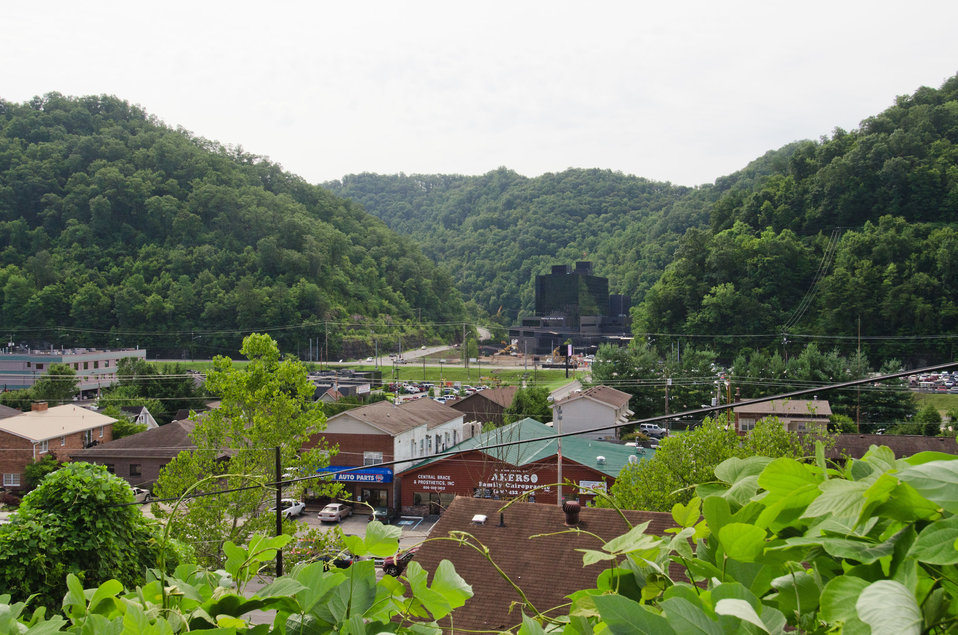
From across the horseshoe shaped town of Pikeville, KY, various buildings, parking lots, temporary walkways, and above ground construction of the Pikeville Medical Center (PMC) expansion project, on Tuesday, July 12, 2011, in Pikeville, KY. After months of infrastructure construction and rain delays, one of Kentucky’s largest American Recovery and Reinvestment Act (ARRA) projects is under way. The $44.6 million Community Facilities Loan will finance construction of a new medical office building and parking garage. The new medical office building will house outpatient surgery, endoscopy, surgical support and provide exam, waiting and office space for 23 primary and specialty care physicians. It also will contain a medical research center to support existing research – in conjunction with Pikeville College – on health disparities, genetic research related to the prevalence of cancer and other areas, including drug and treatment trials. The new parking garage with more than 1,000 spaces will be built adjacent to the new medical building, eliminating the need to shuttle patients back and forth from remote parking areas. The new garage will provide closer and easier proximity to medical and hospital services for all patients.
Wayne Rutherford, County Judge-Executive for Pike County, says funding from ARRA is a boon for his county because it will create jobs.

“This is great for Pike County’s economy. We know we have a great hospital, and with this support, it will be even better,” said Rutherford. “The unemployment rate here is above the state average and this will stimulate jobs. There will be construction, which means lots of jobs on the front end – and even more once it is built.”

Pike County is one of Kentucky’s persistent poverty counties and the current medical facility provides health care services for a rural population of more than 68,000. This project will create 1,430 direct and indirect construction jobs, in addition to 97 long-term jobs. It is scheduled to be completed in December 2012.

“This project is a prime example of the ARRA monies being utilized for much-needed health care facility expansion in an economically-depressed region of Eastern Kentucky and Appalachia,” said Tom Fern, State Director for Rural Development in Kentucky. “This hospital has received national recognition for its quality of care, and this money will allow them to expand and build upon their success and continue providing quality health care services to the region.”

PMC was named National Hospital of the Year by the American Alliance of Healthcare Providers in November 2009. The hospital was among 400 elite health care facilities to apply for this prestigious honor. To earn this recognition, PMC competed against more than 400 hospitals, including the Mayo Clinic, the John Hopkins Hospital, Cedar-Sinai Medical Center, the Cleveland Clinic, Duke University Medical Center and Vanderbilt University.

Pikeville City Manager Donovan Blackburn said the medical center is the largest employer in Pikeville and contributes nearly $2 million to the city through the payment of occupational taxes. He went on to say that Pikeville Medical’s success is also the city’s success because as other cities struggle with dwindling revenues, Pikeville has actually seen growth.

“This is a regional medical center that is very important to the city. Pikeville is a legal, financial and education hub for Eastern Kentucky and a gateway to rural communities in Virginia and West Virginia. There are half a million within a 50-mile radius – so it’s not just local people that depend on this facility,” said Blackburn. “From a regional standpoint it adds volume from a jobs standpoint. Everybody in this county knows someone or has family that works for Pikeville Medical Center.
“People in this area used to have to go out of the area for good jobs and quality medical services, but Pikeville Medical has changed that,” added Blackburn. 'And it has impact on other parts of the city’s economy – hotels, restaurants and retail. It increases the quality of life tenfold.”

The Recovery Act was designed to spend money gradually over time in order to sustain a true recovery – with peak spending to occur early this year. While the experts agree that ARRA is already responsible for creating or saving approximately two million jobs, about 75 percent of recipients that reported on their Recover Act spending indicated their projects are less than half complete, meaning there is even more job impact from those dollars to come.